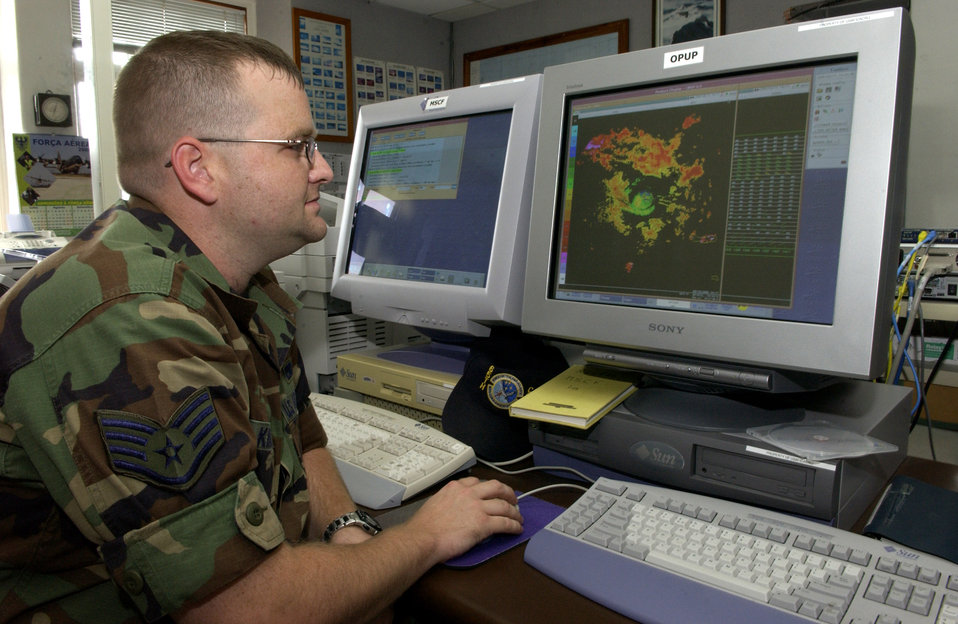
Lajes Field prepares for Hurricane Gordon

Staff Sgt. Jeremy Kimmy repairs weather forecasting equipment in preparation for Hurricane Gordon, expected to hit Lajes Field, Azores, Portugal, early Sept. 20. Sergeant Kimmy is assigned to the 65th Communications Squadron.